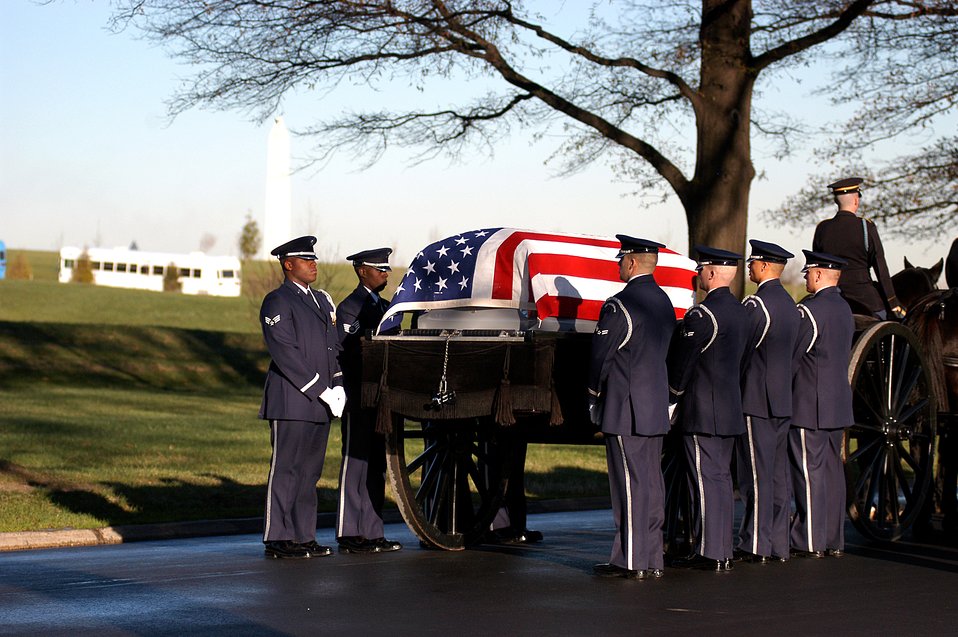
Honor guard lays to rest Airmen killed in Iraq

Air Force Honor Guardsmen transfer the casket carrying Maj. Troy Gilbert from the caisson to the grave site during a full honors funeral Dec. 11 at Arlington National Cemetery. Major Gilbert was the pilot of an Air Force F-16 Fighting Falcon engaged in support of coalition ground combat operations that crashed approximately 20 miles northwest of Baghdad Nov. 27.